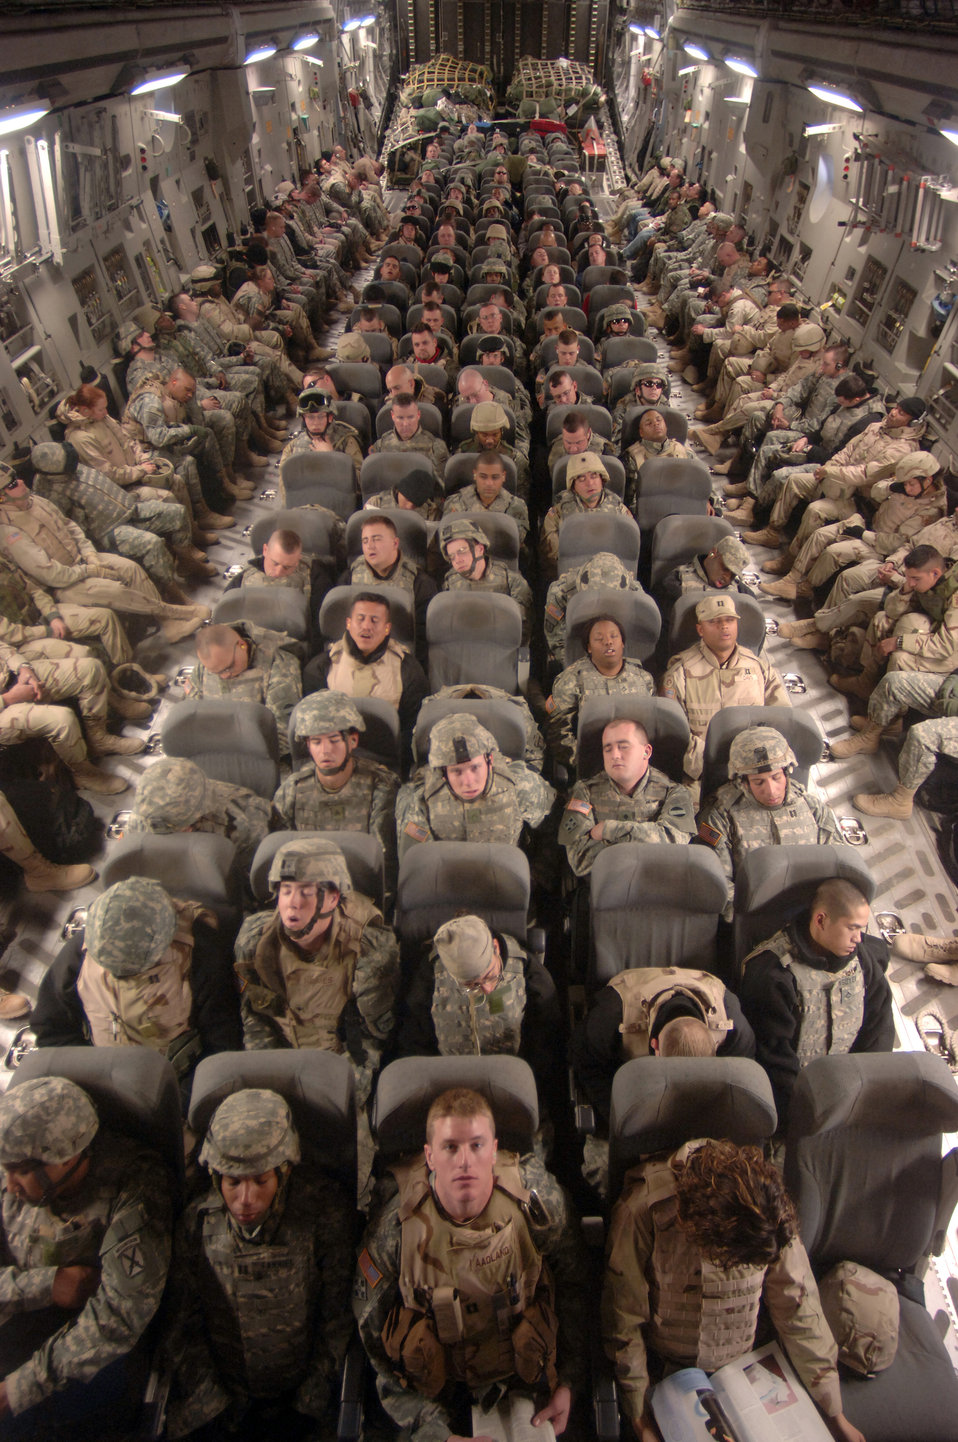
Troop movement

Capt. Erik Aadland, front and center, looks up during a flight over Iraq Saturday, Feb. 18, 2006. Most of the passengers were returning to Iraq after a two-week break. The aircraft and crew are deployed from the 315th Airlift Squadron at Charleston Air Force Base, S.C.